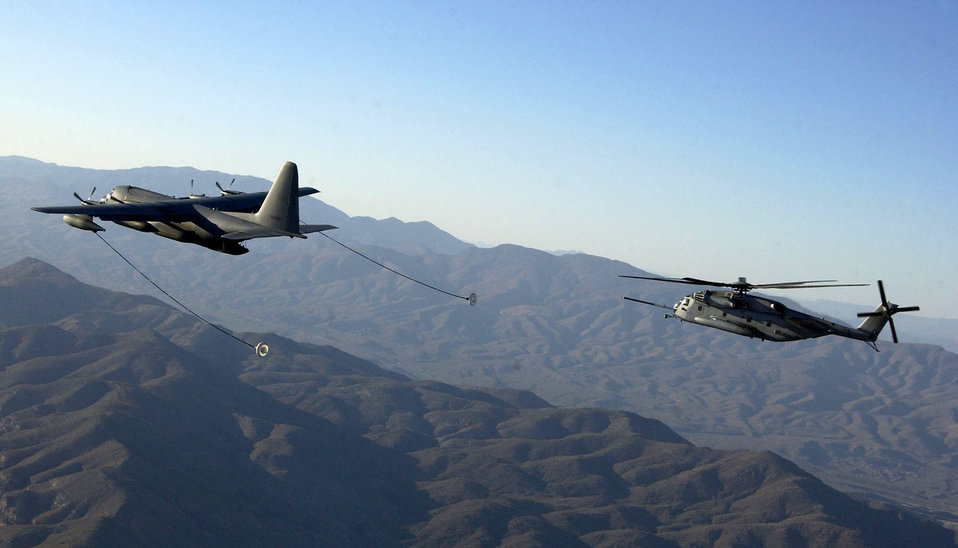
Snowbird operations

An HC-130 from the 79th Rescue Squadron at Davis-Monthan Air Force Base, Ariz., refuels a CH-53E Super Stallion helicopter from the Marine Heavy Helicopter Squadron 769 at Edwards Air Force Base, Calif. The CH-53Es are here training with Airmen as part of Davis-Monthan's joint operations training.